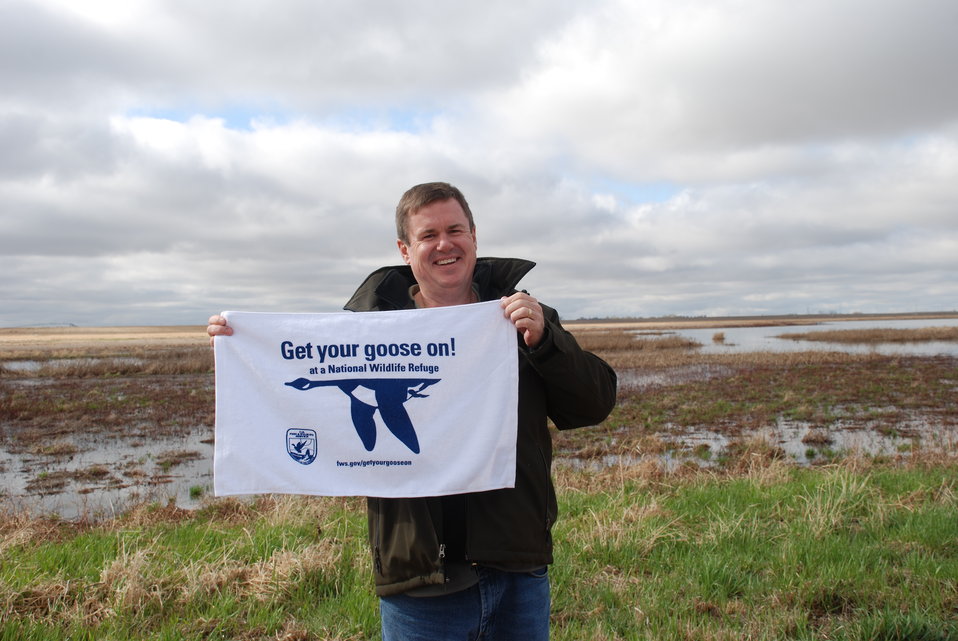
Get Your Goose On! at the Rainwater Basin Wetland Management District